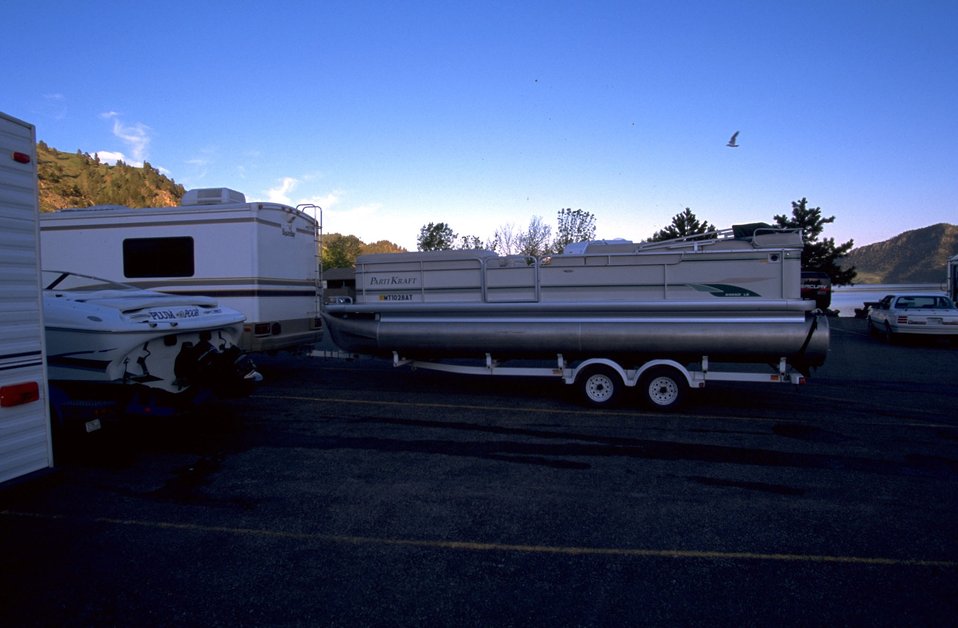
Boat in parking lot of Holter Lake Campground